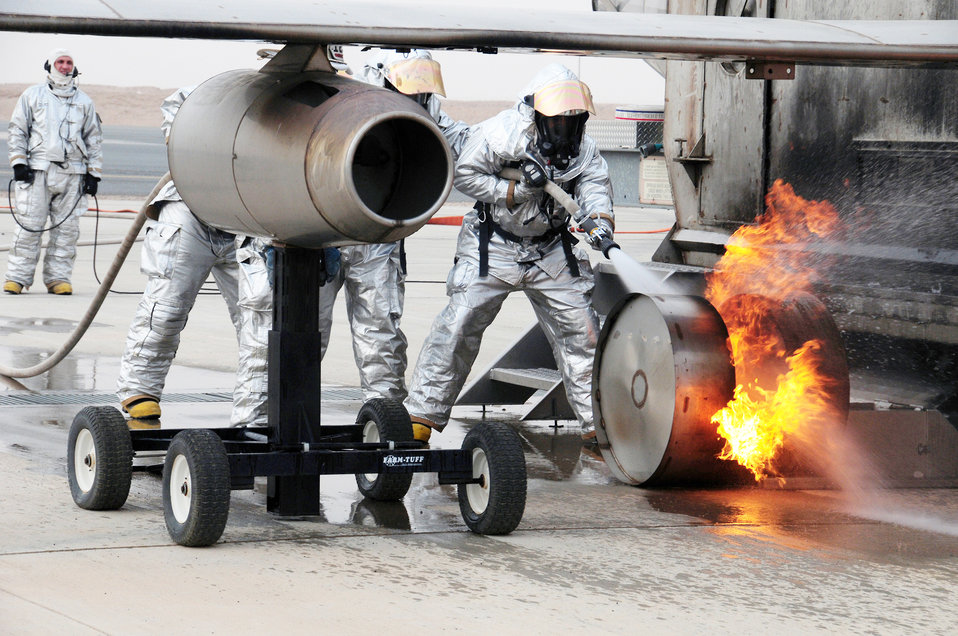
Firefighters test their skills

Firefighters practice extinguishing an aircraft fire April 29, 2010, during fire training at an air base in Southwest Asia.